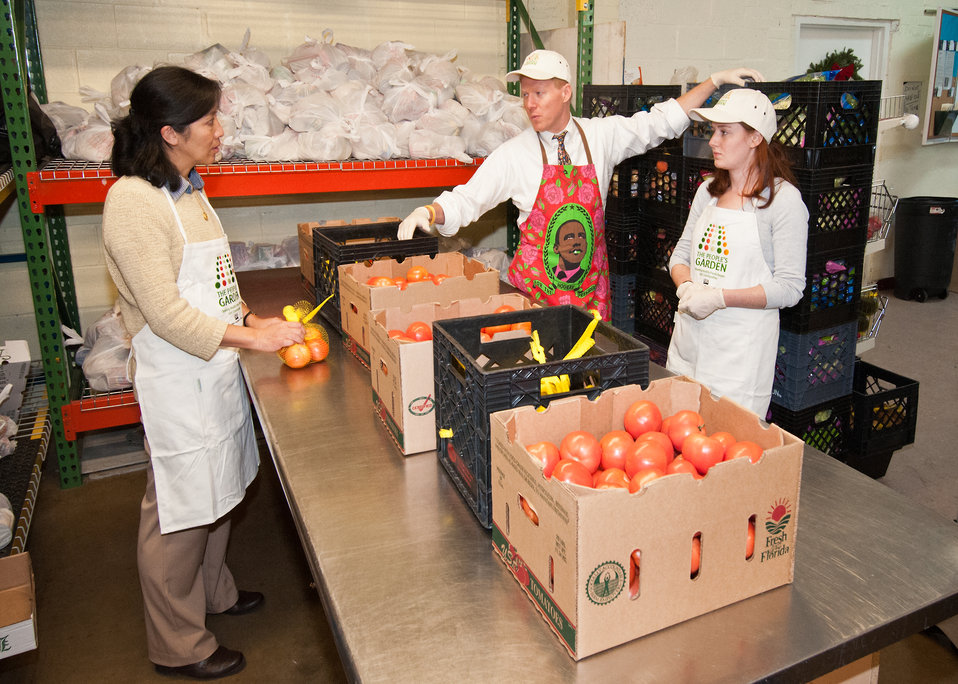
From left: Puwen Lee, Volunteer Coordinator, Arlington Food Assistance Center, Max Finberg, Director, Center for Faith Based and Neighborhood Partnerships and Brooke Barran, Special Assistant to Deputy Arlington Secretary Dr. Kathleen Merrigan discuss providing supplemental and nutritious food free of charge to Arlington families who cannot afford to purchase all the food they need at the AFAC in Arlington, Virginia, on Thursday, January 12, 2012. Agriculture Secretary Tom Vilsack designated January 12, 2012 as the first United States Department of Agriculture’s Martin Luther King Day of Service to recognize Dr. King’s contributions to the Civil Rights Movement. The volunteer service involved USDA nutrition programs.